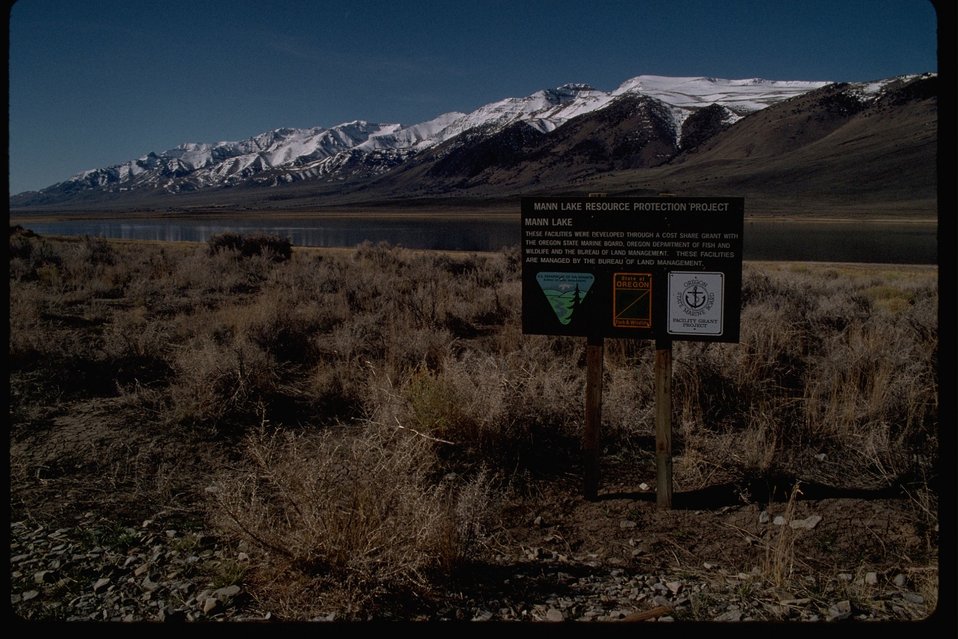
Interpretive sign (reading: Mann Lake Resource Protection Project) and Mann Lake on the east side of Steens Mountain. (Watchable Wildlife site too)